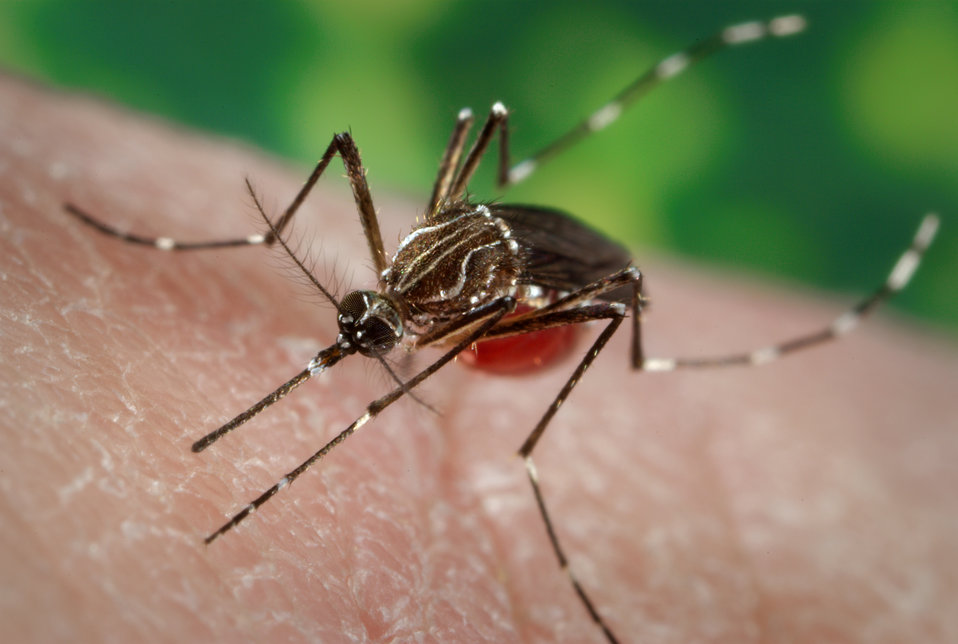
This Aedes aegypti female was from a strain of mosquitoes named LVP-IB12, an acronym representing the fact that these mosquitoes were derived from the Liverpool strain (LVP), and that they were inbred 12 times (IB12), in order to create a more homogeneous genotype. Also, of great importance is the additional fact that this specie is being used in the A. aegypti genome sequencing project. Though the mosquito's geographical origin is not known, it is believed to be somewhere in Africa.